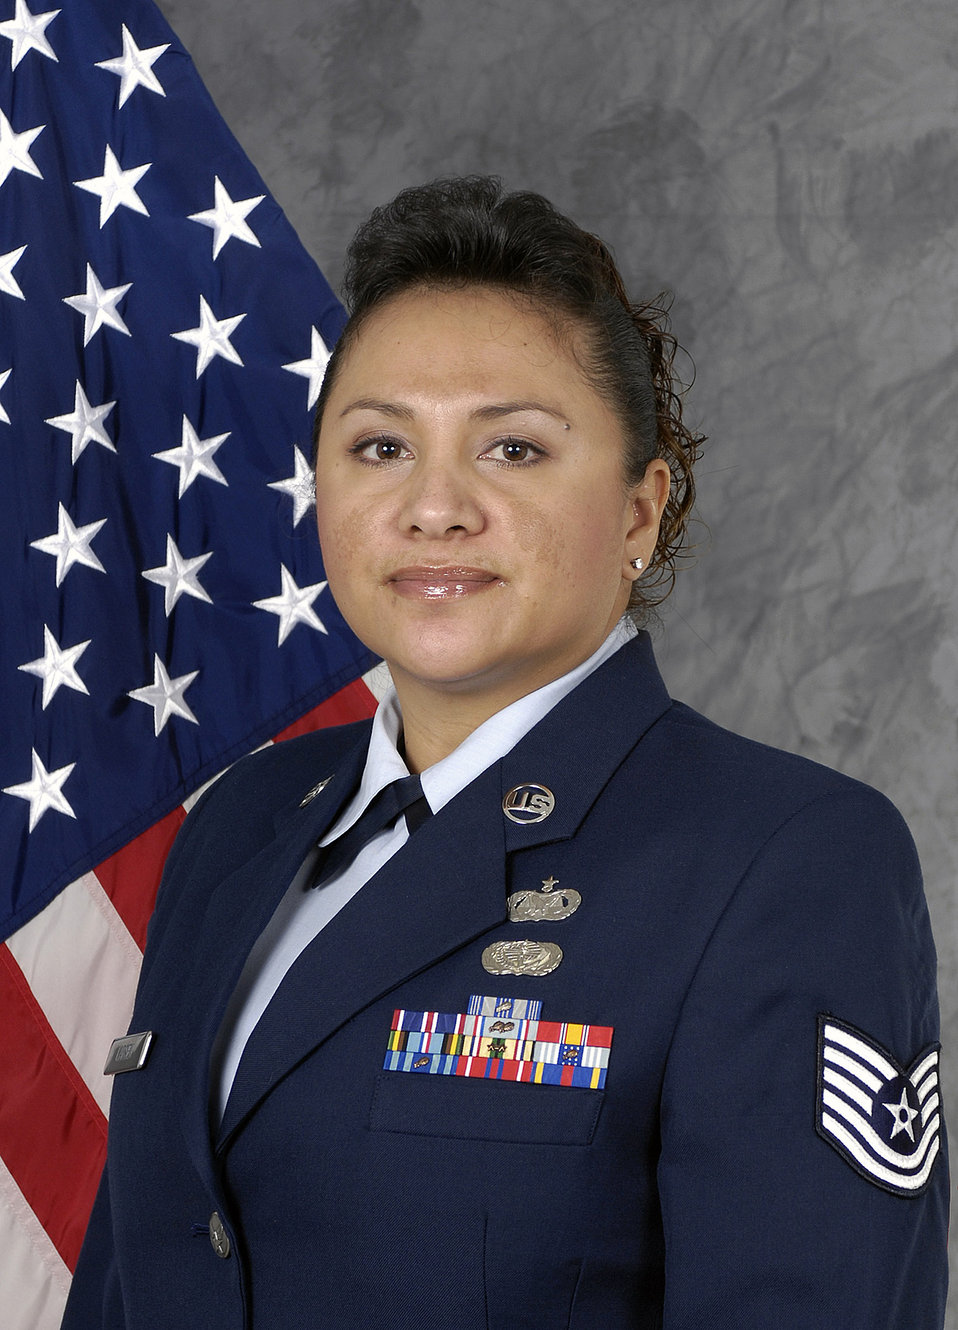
Servicemembers mourn loss of one of their own

A memorial service was held for Tech. Sgt. Jackie Larsen July 20 at Joint Base Balad, Iraq. Sergeant Larsen, who died from non-combat related causes July 17, was a paralegal working with the Law and Order Task Force of the 732nd Expeditionary Support Squadron. Her duties placed her at Forward Operating Base Shield where she served as the NCO in charge of all personnel movements for the LAOTF. She was deployed from Beale Air Force Base, Calif., and her hometown was Tacoma, Wash.